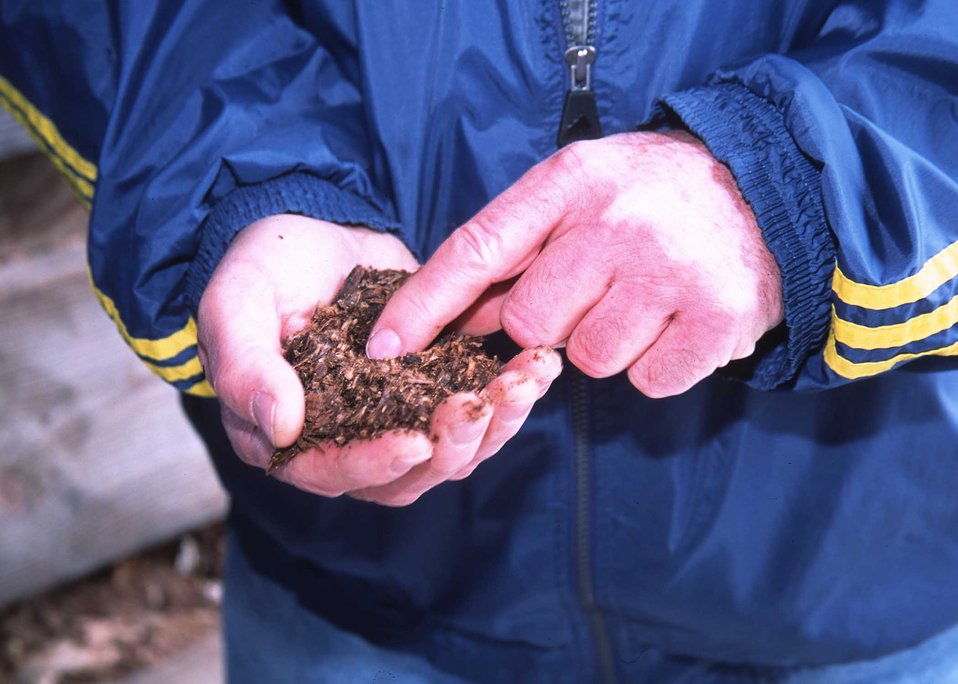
Compost containing turkey manure and wood chips from bedding material is dried and then applied to pastures for fertilizer. Benton, Arkansas.